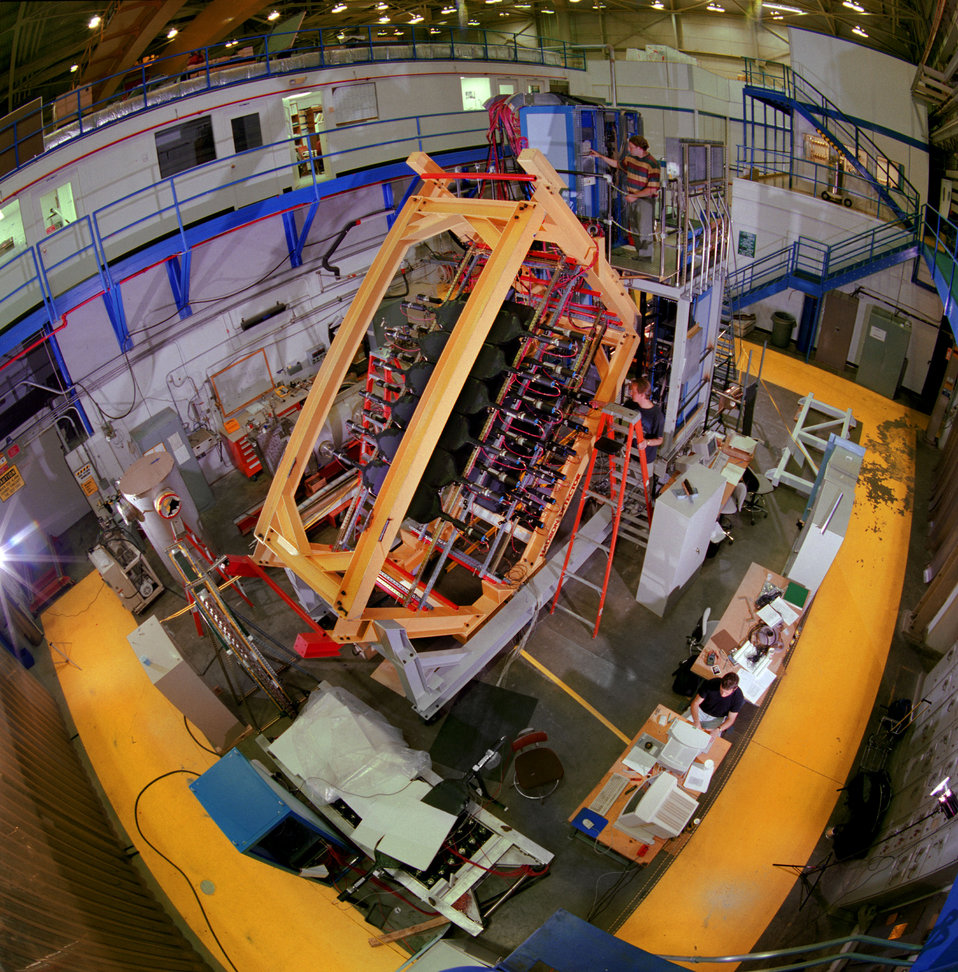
Jefferson Lab CBAF Newport News VA

95 345 DOE photo by Lynn Freeny 8-24-1995 Newport News VA